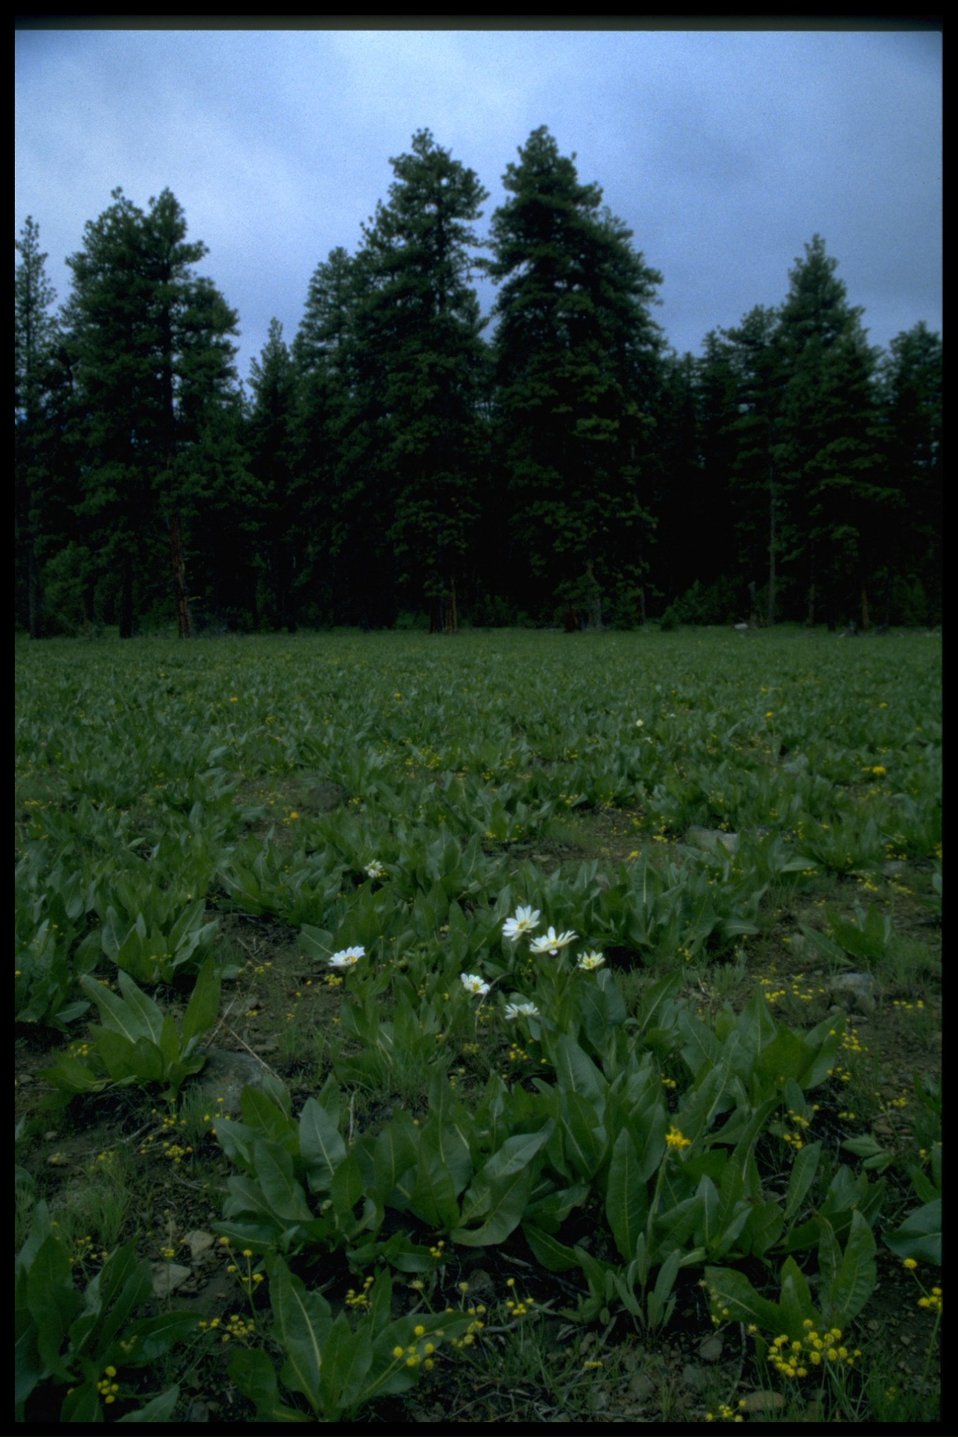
Prairie display of white-rayed mule's ears (Wyethia helianthoides) and slenderfruit lomatium (Lomatium leptocarpum).